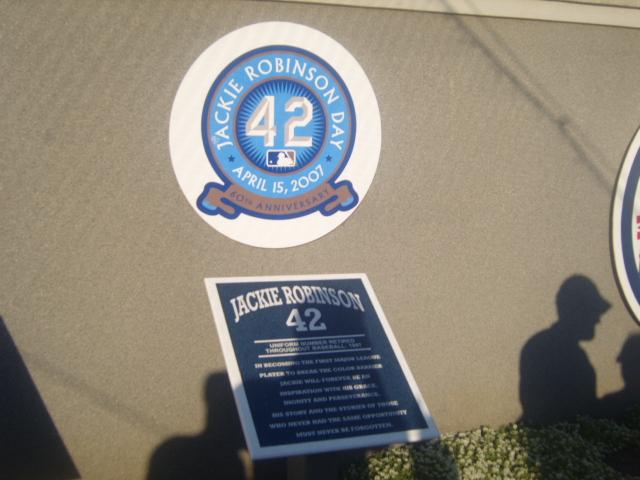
The plaque dedicated to Jackie Robinson in Monument Park.